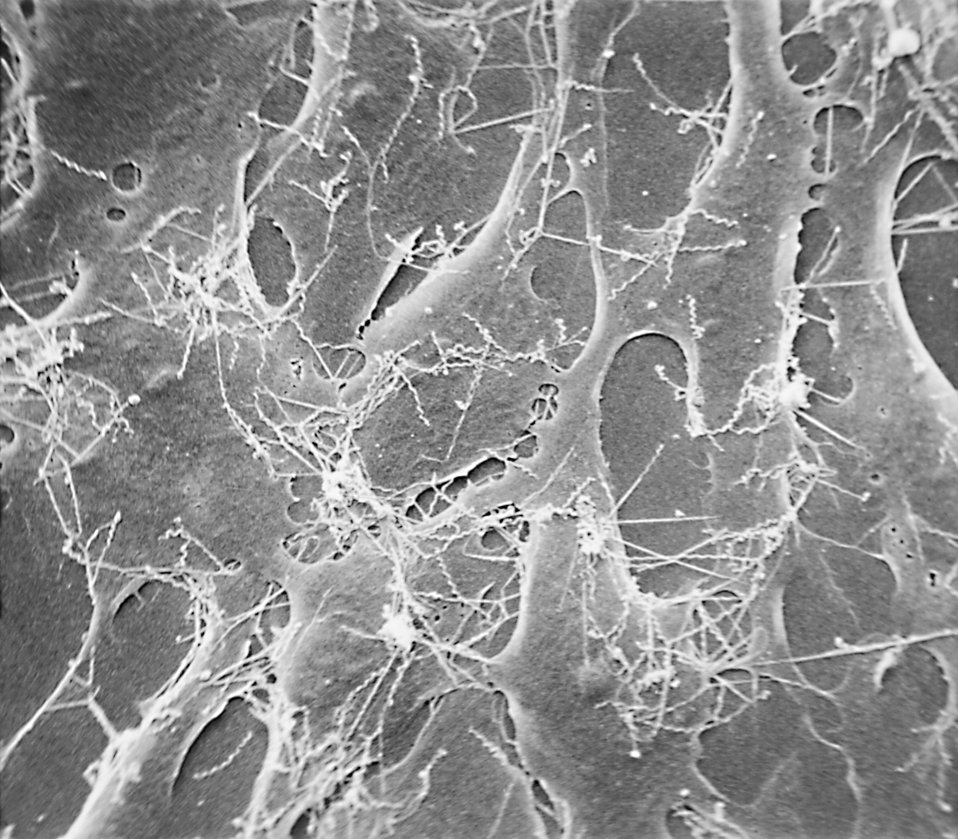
Electron micrograph of Treponema pallidum on cultures of cotton-tail rabbit epithelium cells (Sf1Ep).